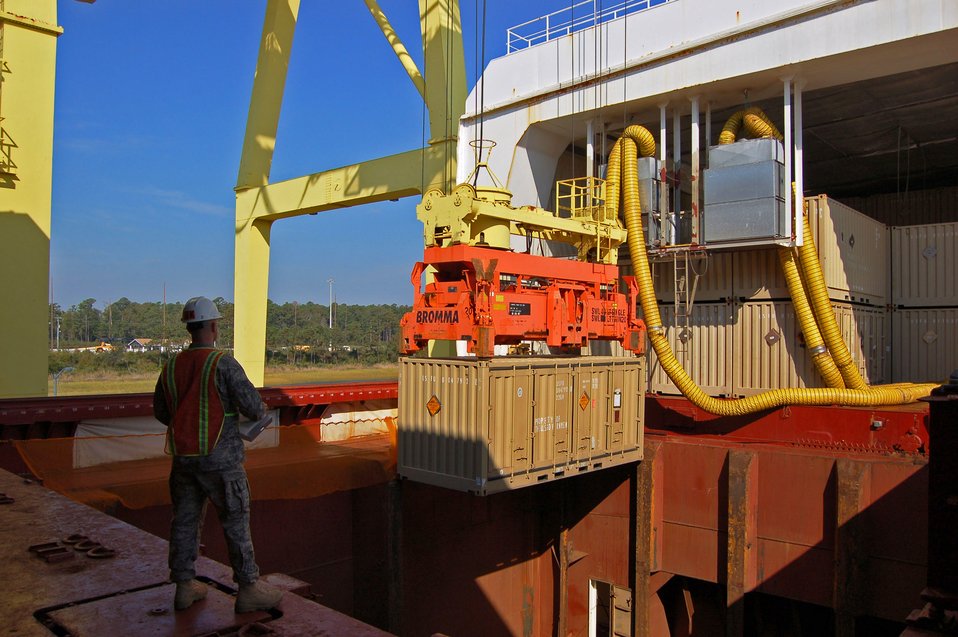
Air Force armada all about the ammo

Senior Airman Joseph Fitchett marks container numbers off a checklist as they are unloaded from the cargo hold of the MV Capt. Steven L. Bennett, a ship belonging to the Air Force's Afloat Pre-positioned Fleet, Oct. 16 at the Military Ocean Terminal-Sunny Point, N.C. The APF ships are loaded with thousands of tons of munitions and then sail to a predetermined point in the Pacific or Indian Ocean where they wait to offload their cargo when needed. Airman Fitchett is an APF team member from Spangdahlem Air Base, Germany.